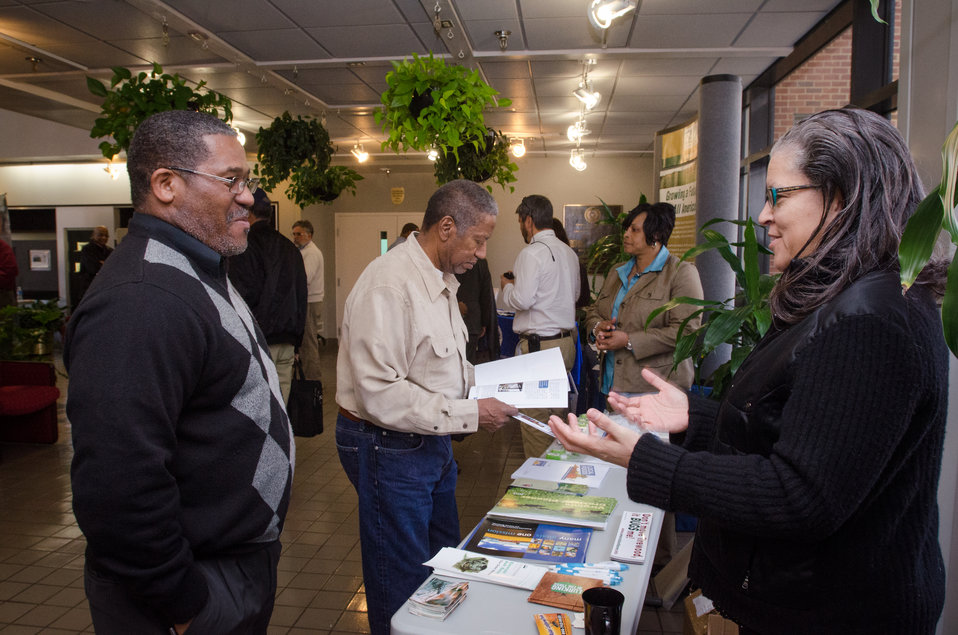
Staffers and farmers came together for the “Virginia State University (VSU), U.S. Department of Agriculture (USDA) and Virginia Farmers Working Together” outreach workshop in the VSU, L. Douglas Wilder building on Thursday, March 7, 2013, in Petersburg, VA. Farmers shared and learned new ways to do more with USDA services, and how to apply for programs that will help grow their business.